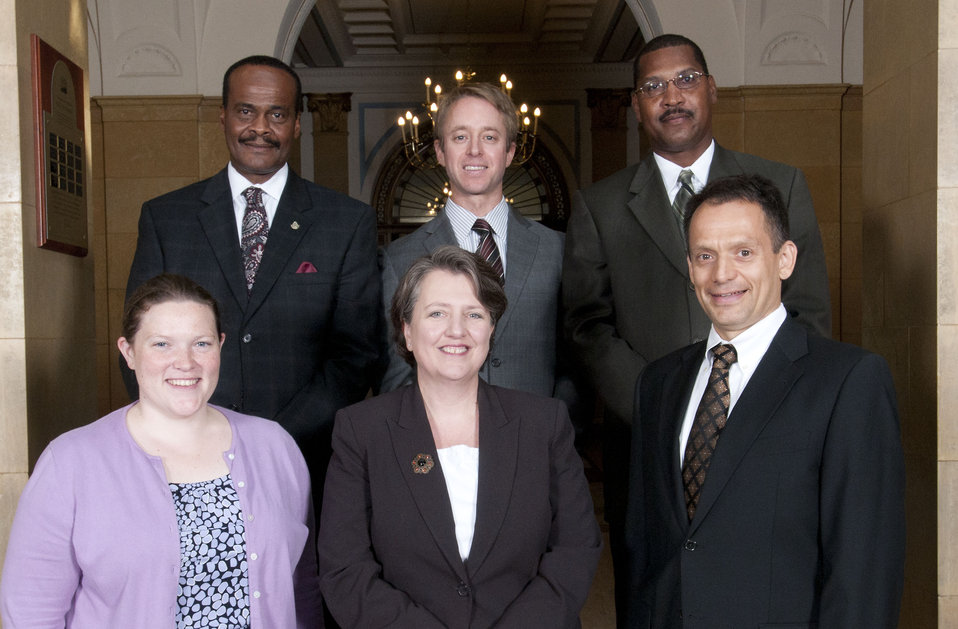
Migratory Bird Habitat Initiative Team, Natural Resources Conservation Service, Washington, DC. Dave White, Group Leader. For developing and implementing the Migratory Bird Habitat Initiative, providing needed food and nesting areas for thousands of migratory birds impacted by the 2010 Deep Water Horizon Oil Spill.
On September 14, 2011 in the patio of the Whitten Building Patio of the US Department of Agriculture in Washington, DC.